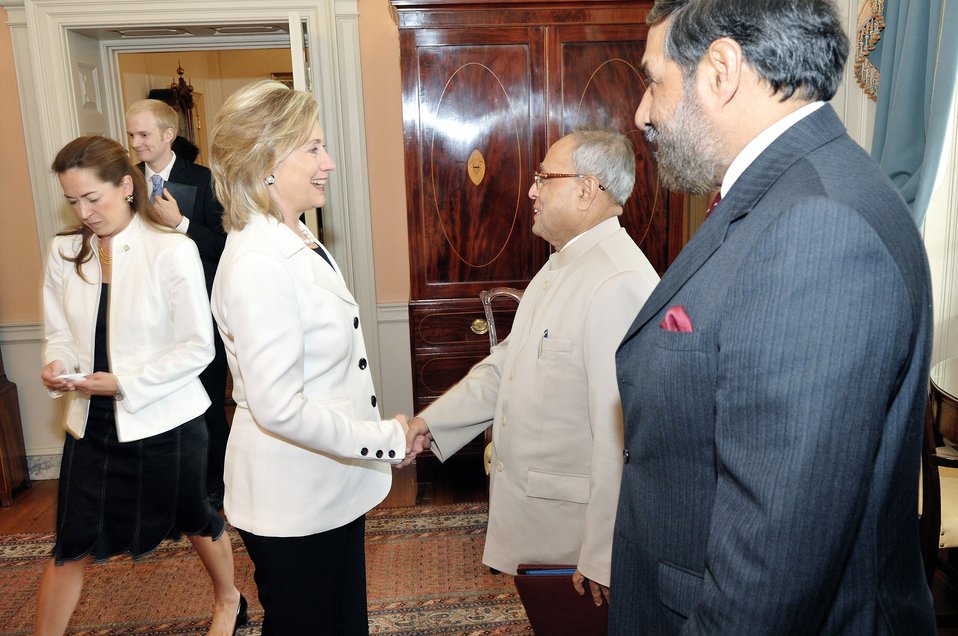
Secretary Clinton Shakes Hands With Indian Finance Minsiter Mukherjee

U.S. Secretary of State Hillary Rodham Clinton shakes hands with Indian Finance Minister Pranab Mukherjee at the U.S. Department of State on June 22, 2010.